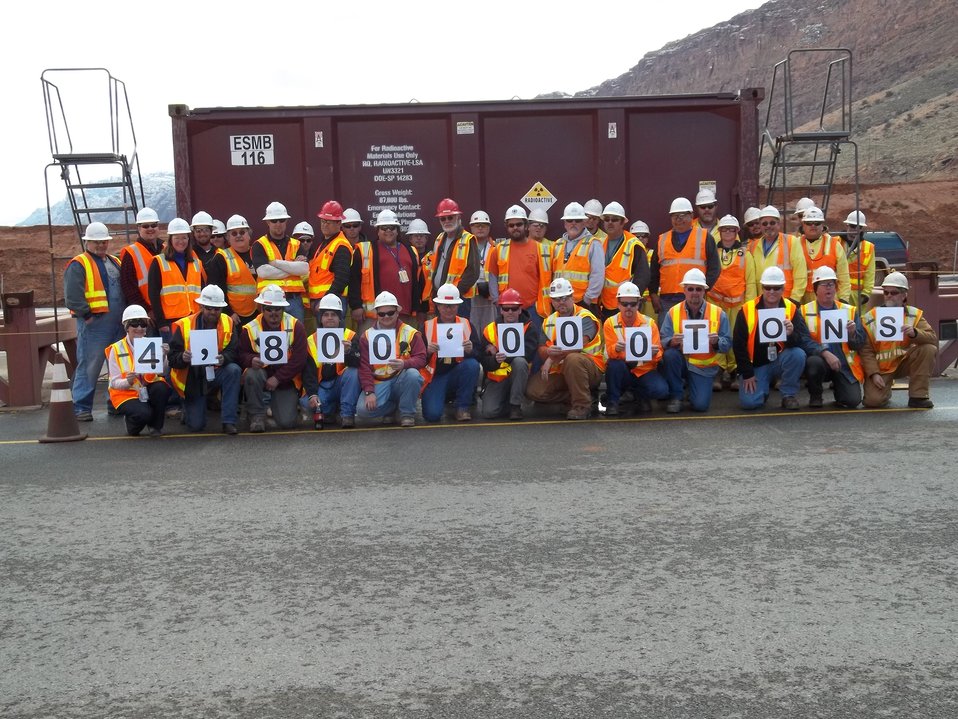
Moab Milestone

On December 14, 2011, workers at the Moab, Utah, UMTRA Project site celebrated reaching the milestone of having shipped 4.8 million tons of uranium mill tailings from the Moab site to the Crescent Junction site for disposal.